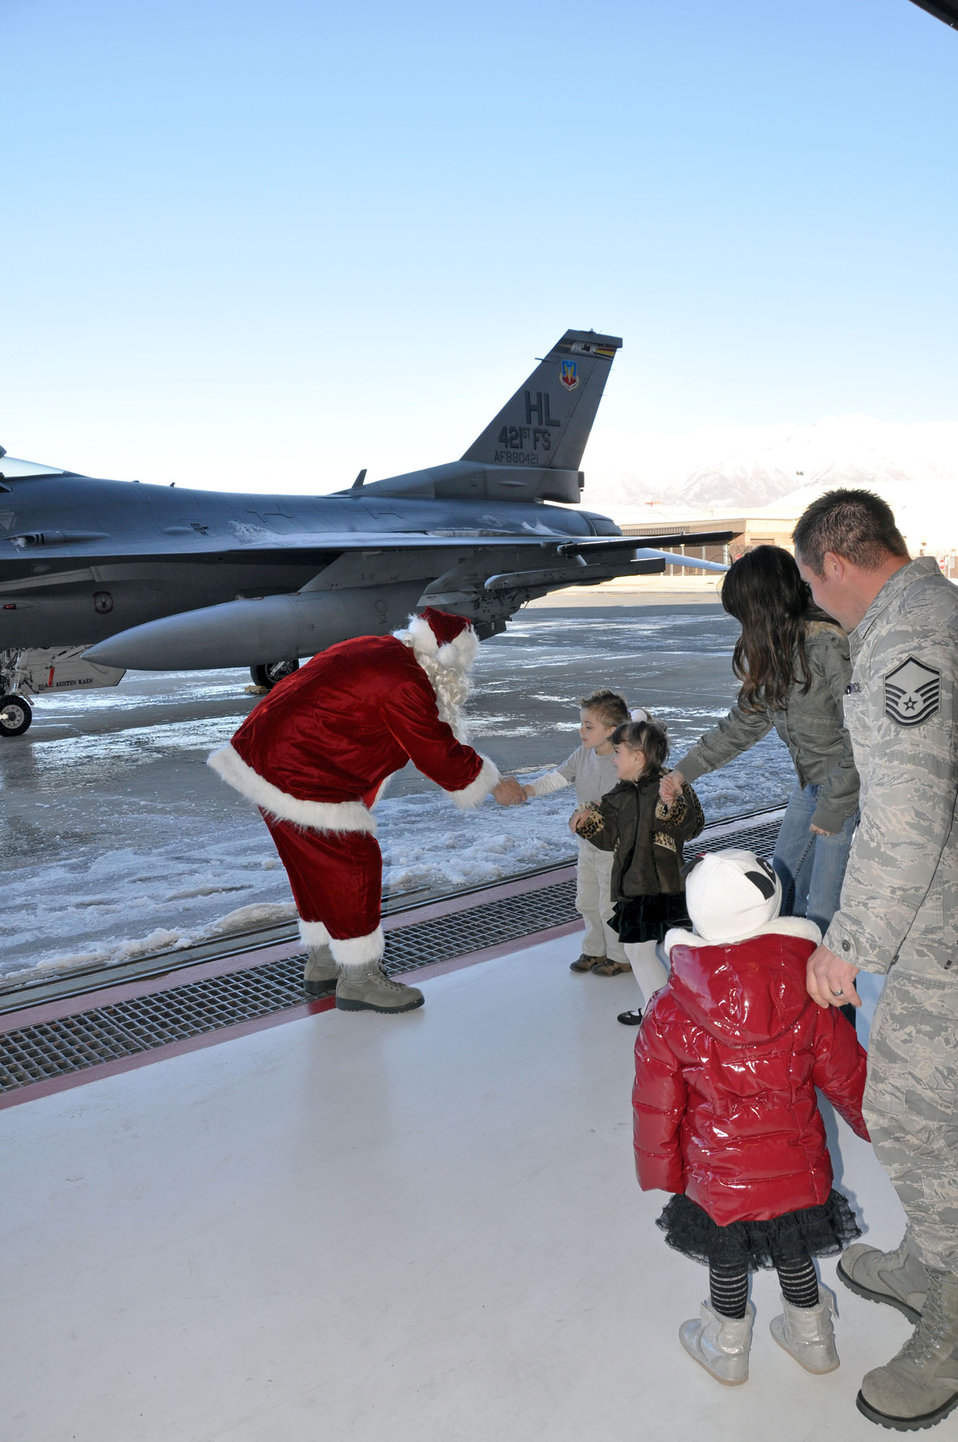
Hello, have you been good?

Santa greets children at the 419th Fighter Wing's annual holiday party Dec. 16, 2010, at Hill Air Force Base, Utah.